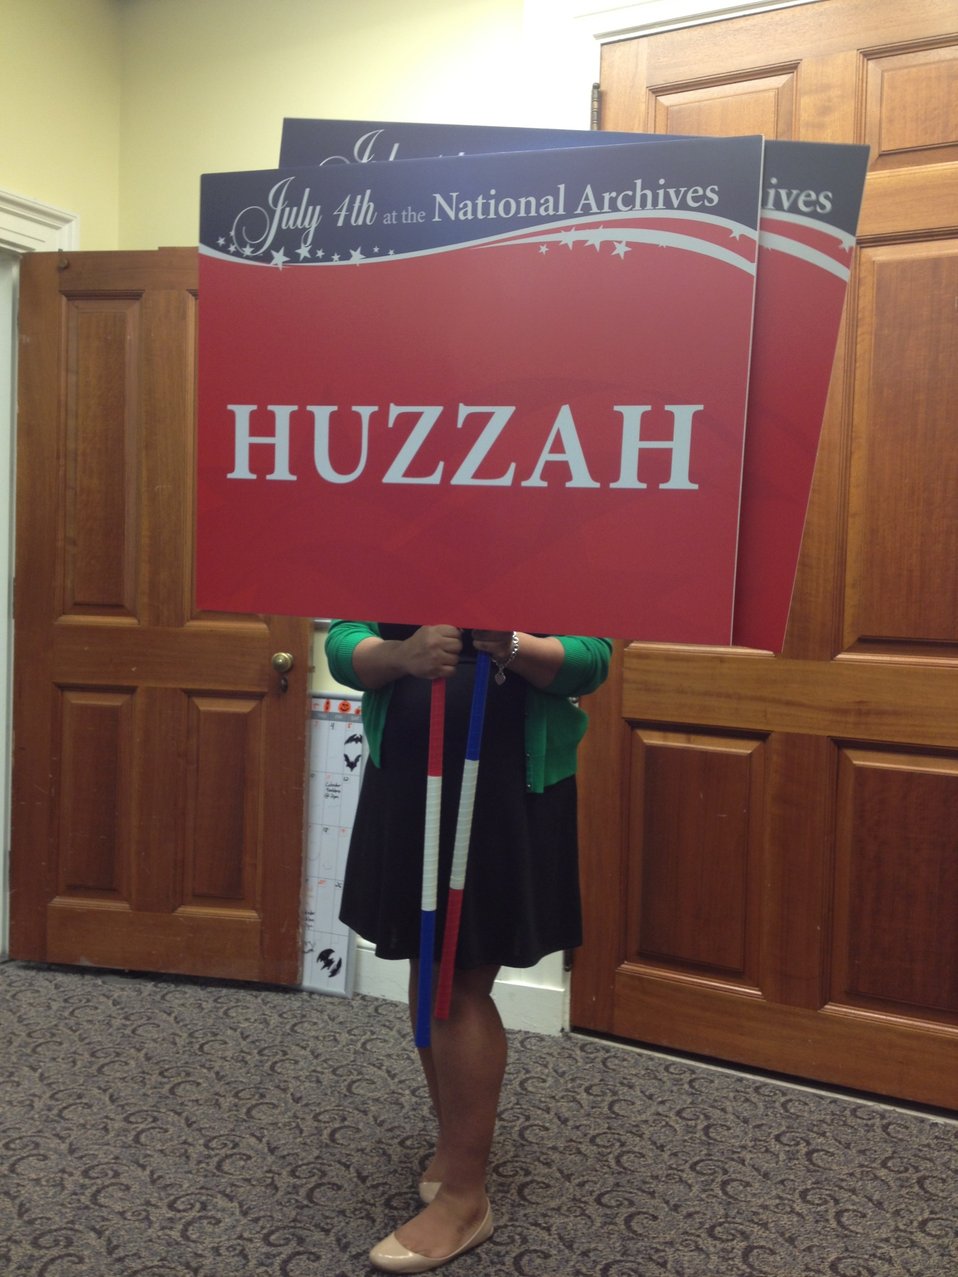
Quinn Bruster displaying the new 4th of July signage; Location: Archives 1 - Room 110, Washington, D.C.